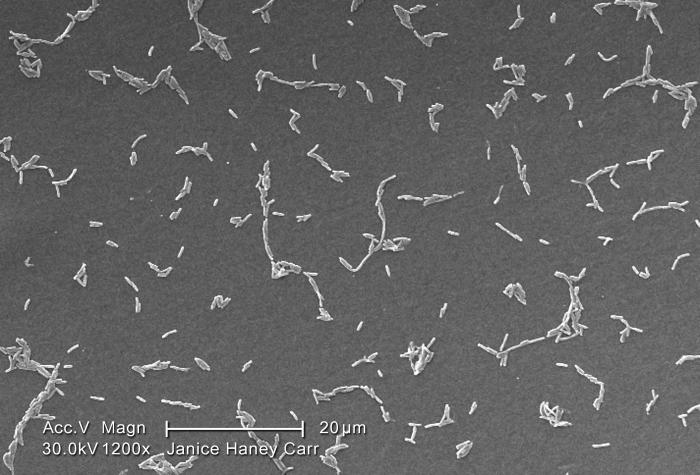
Under a moderate magnification of 1200X, this scanning electron micrograph (SEM) depicted a diffuse group of Gram-negative Legionella pneumophila bacteria. Please see PHIL 11092 through 11152 for additional SEMs of these organisms, specifically PHIL 11102 for a colorized version of this image.